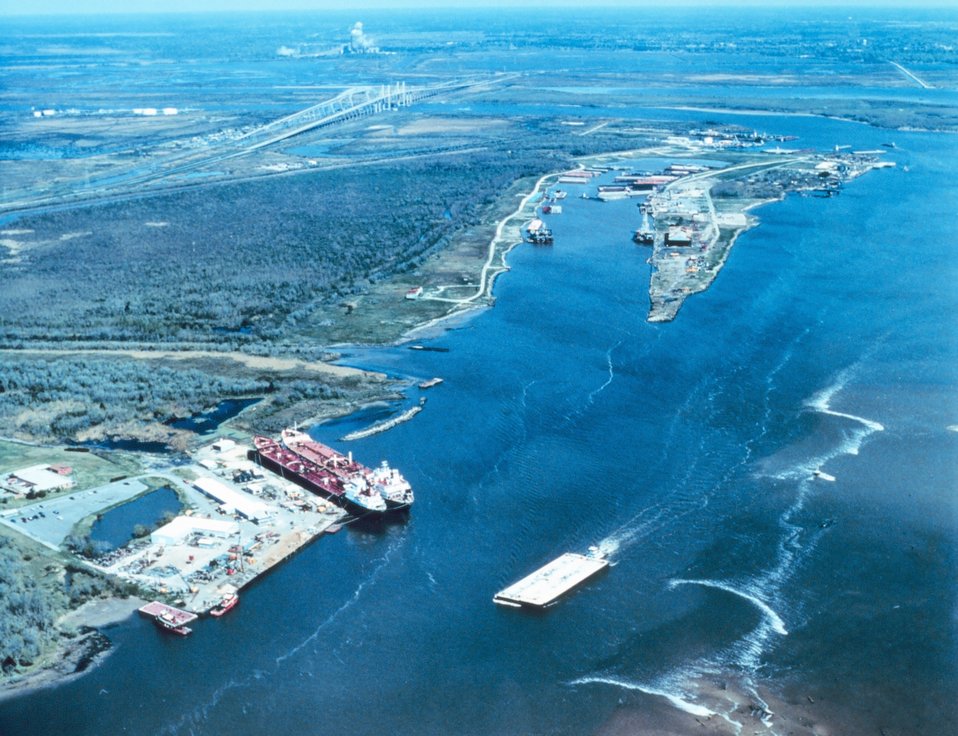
2952 North Latitude 9357 West Longitude.